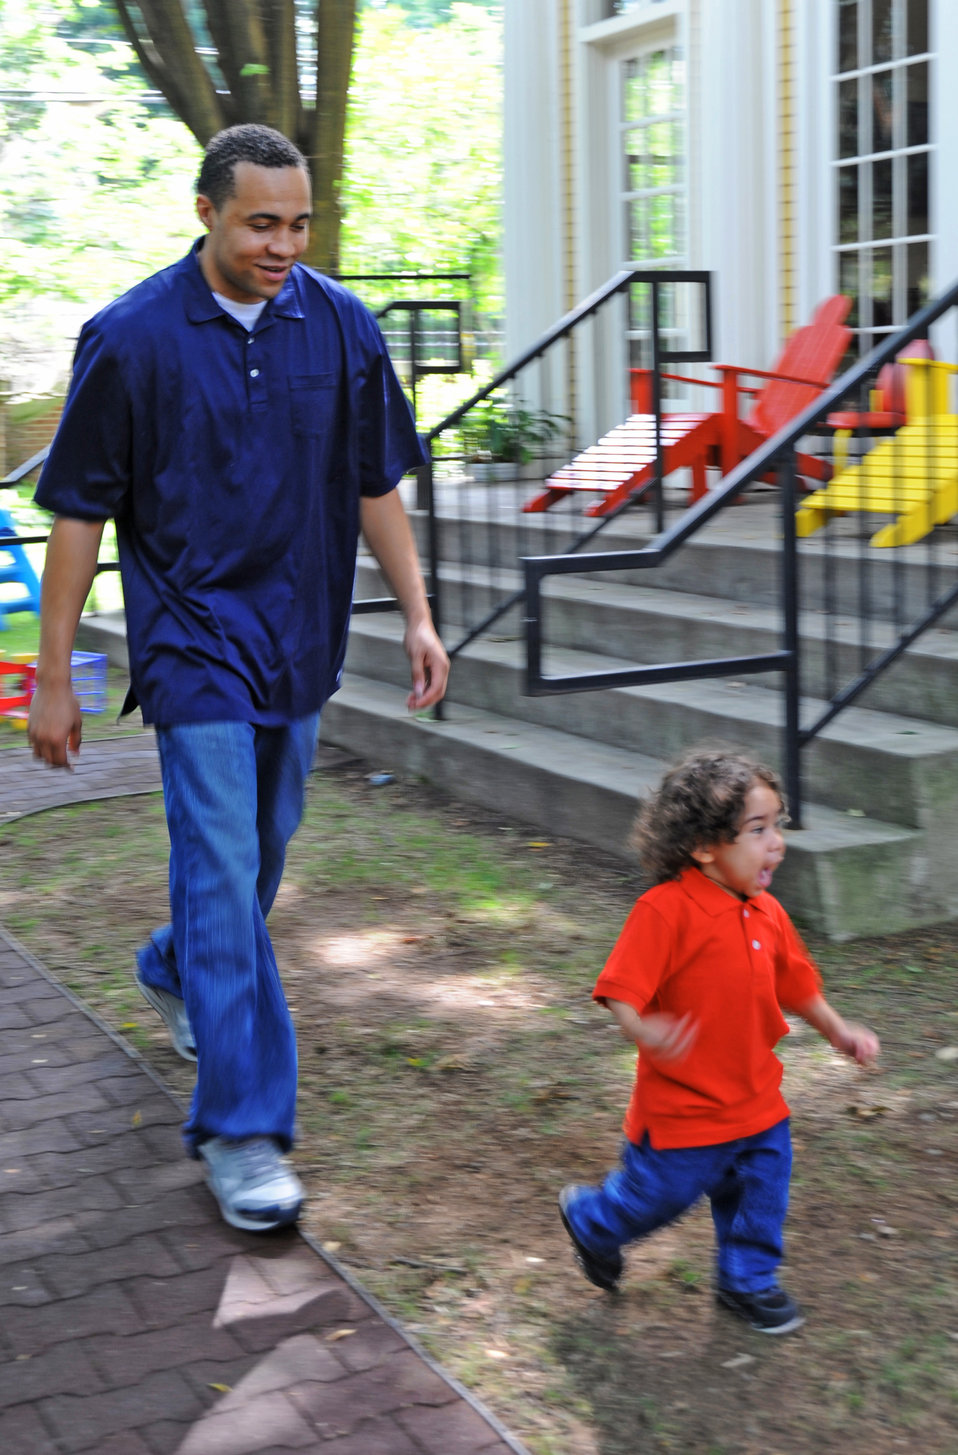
Genghis Webb

Mario and Genghis Webb play a game of